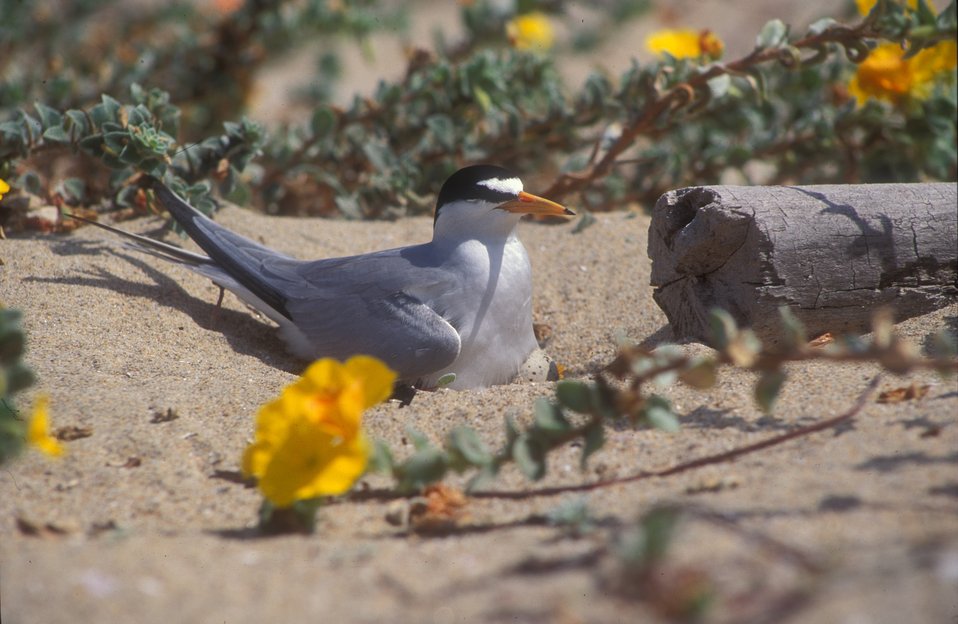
California least tern nesting

Nesting season for California least terns (Sternula antillarum browni) occurs from mid-April to August.

Female California least terns generally lay 1 to 3 eggs which take about 3 weeks to hatch.